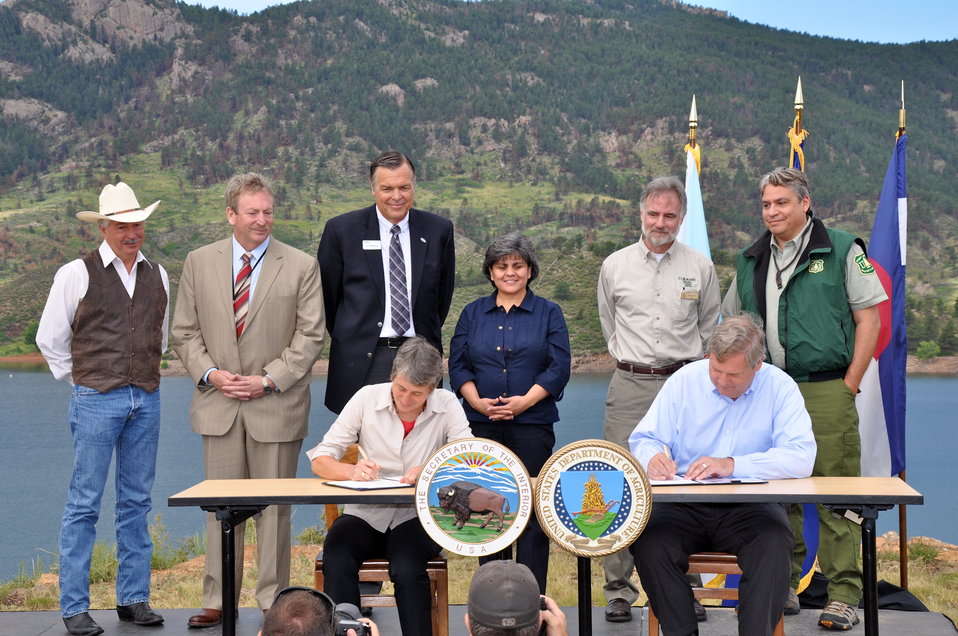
Agriculture Secretary Tom Vilsack and Interior Secretary Sally Jewell sign a Memorandum of Understanding (MOU) at the Horsetooth Reservoir in Fort Collins, CO on Jul. 19, 2013. This MOU will facilitate activities such as wildfire risk reduction through forest thinning, prescribed fire and other forest health treatments; minimizing post-wildfire erosion and sedimentation; and restoring areas that are currently recovering from past wildfires through tree planting and other habitat improvements.